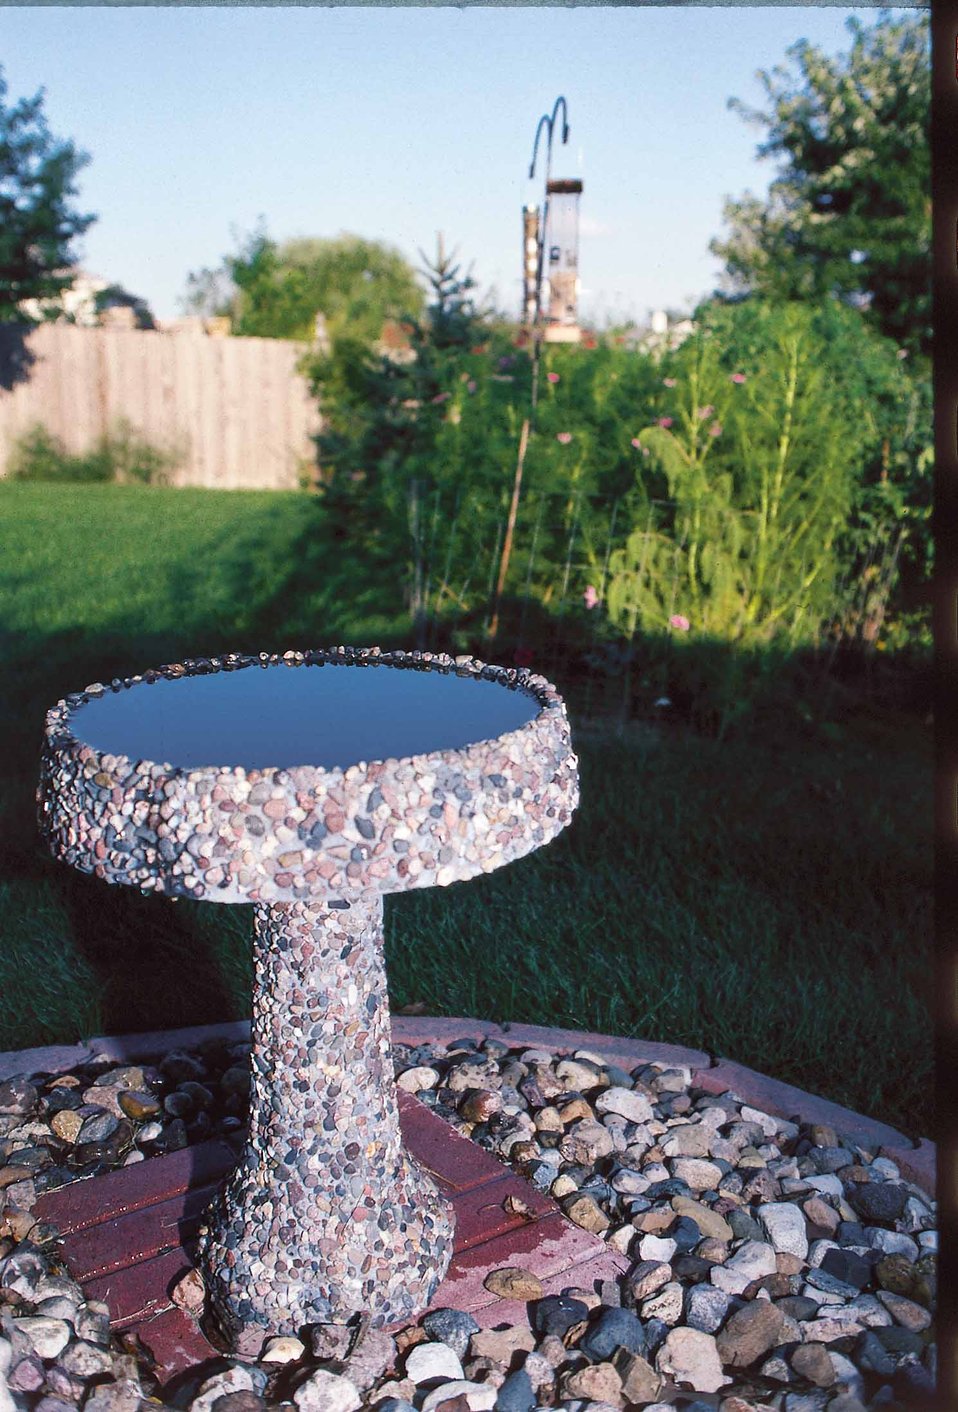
A birdbath in a yard

A stone birdbath in an Urbandale, Iowa back yard.